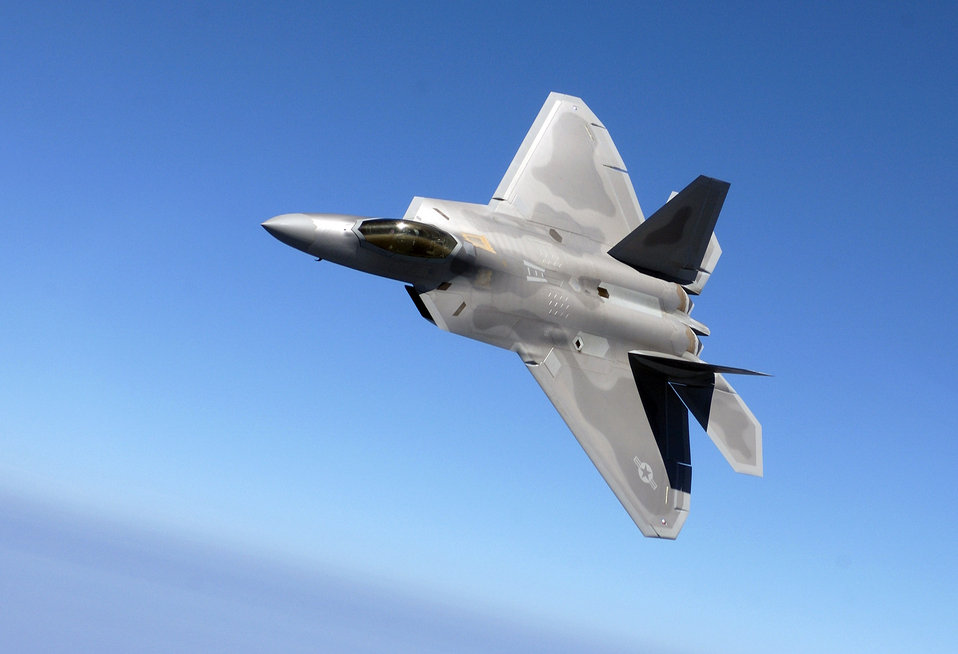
Virginia ANG transitions to F-22

The Virginia Air National Guard's 192nd Fighter Wing is the first Air National Guard unit in the country to fly the F-22 Raptor. The transition from the F-16 Fighting Falcon to the F-22 took place June 20.